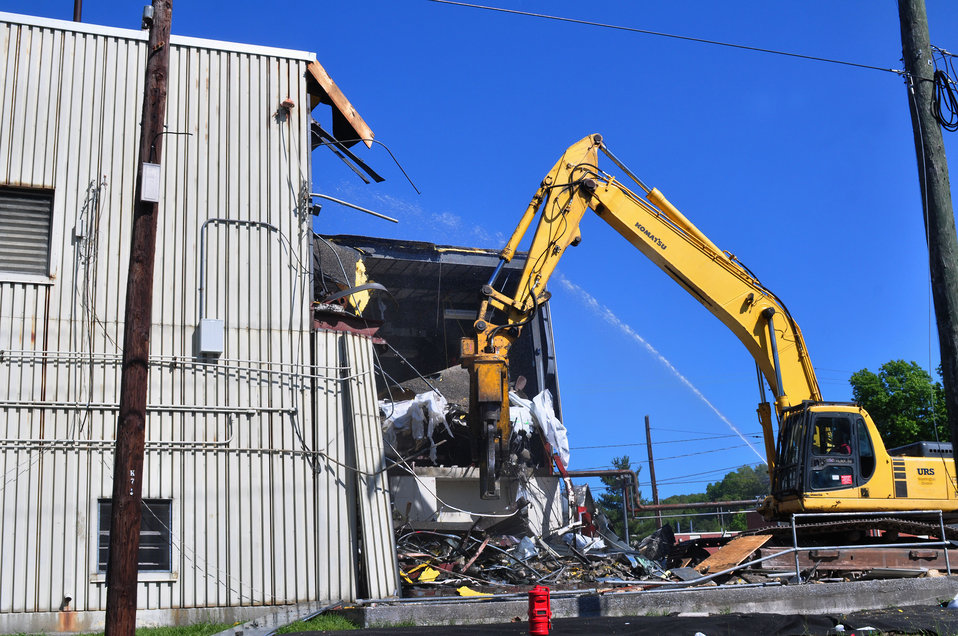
DandD work on Bld. 3508 at Oak Ridge National Lab.

12-077-45 DOE photo by Lynn Freeny

Oak Ridge Tennessee 4-13-2012